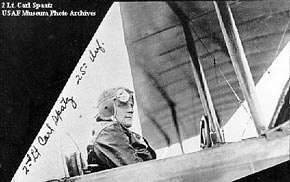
Gen. Carl A. Spaatz

2nd Lt. Carl A. Spaatz.